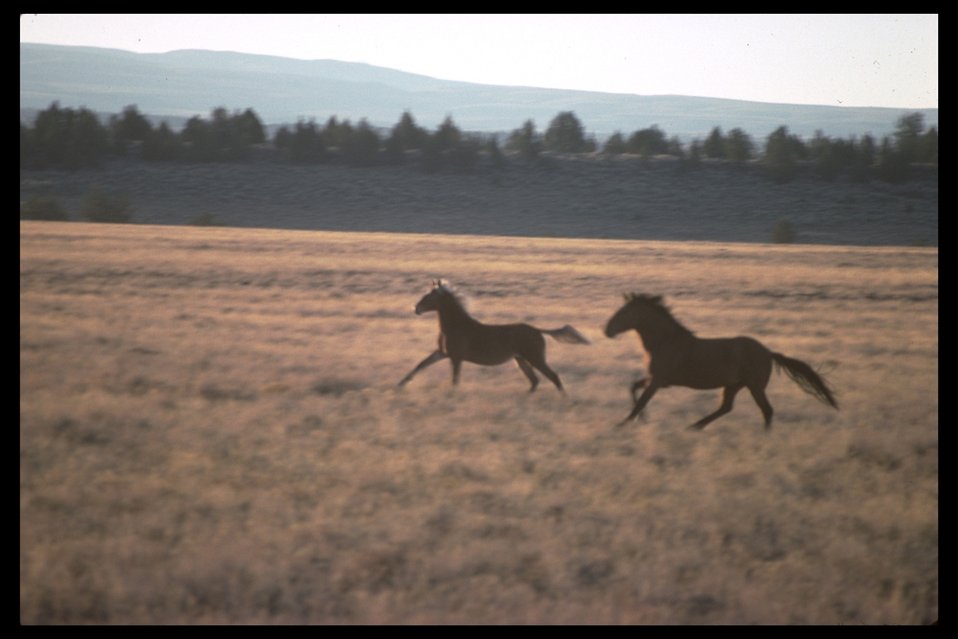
Wild horses running along the northern border of Donner and Blitzen WSA. (WSA 2-85G)